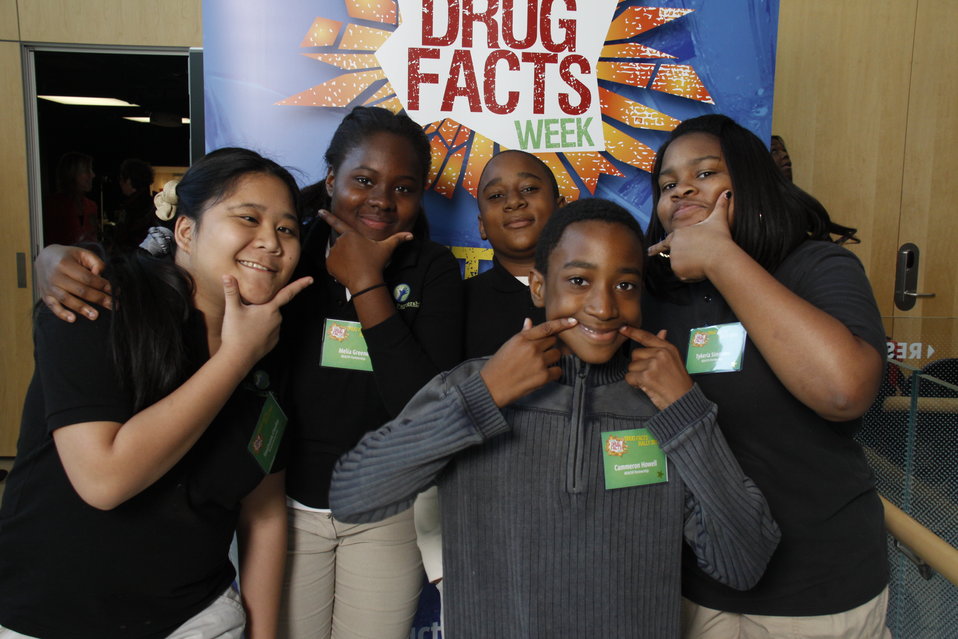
NDFW Mentor Event